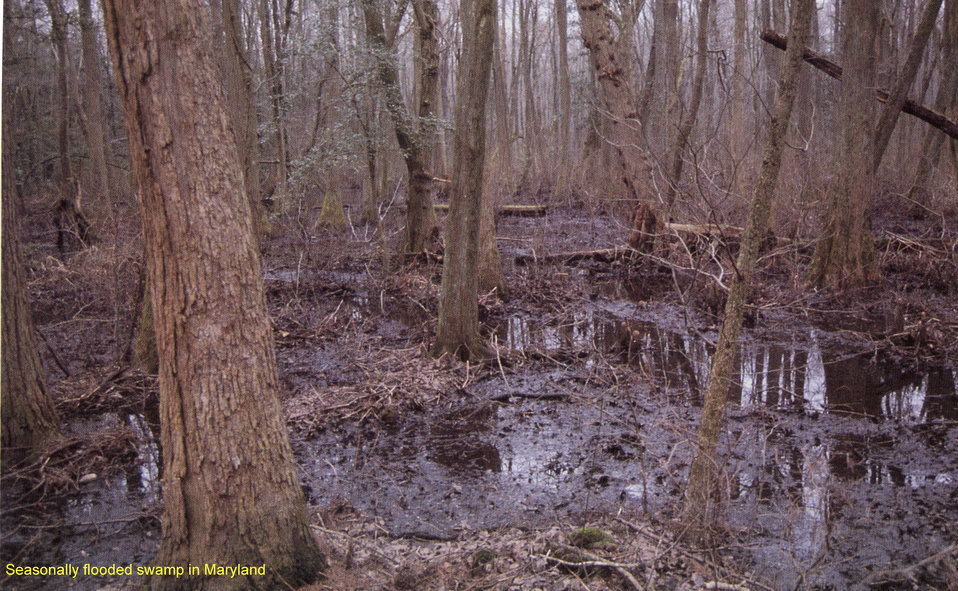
Seasonally Flooded Swamp in Maryland